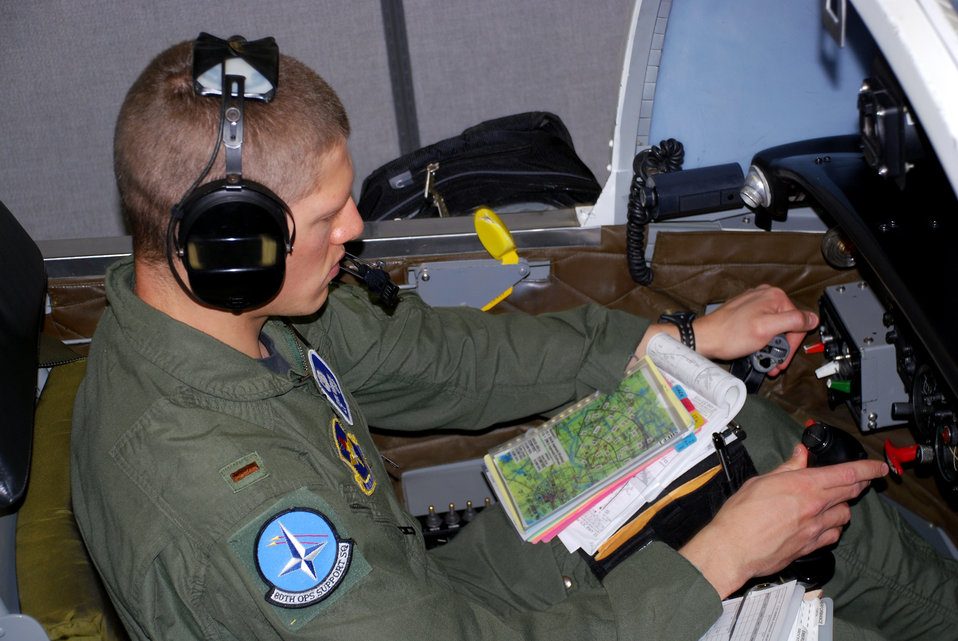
Student 'flies' last T-37 simulator mission

Second Lt. Evan Negron, a T-37 Tweet student pilot in the Euro-NATO Joint Jet Pilot Training Program at Sheppard Air Force Base, Texas,